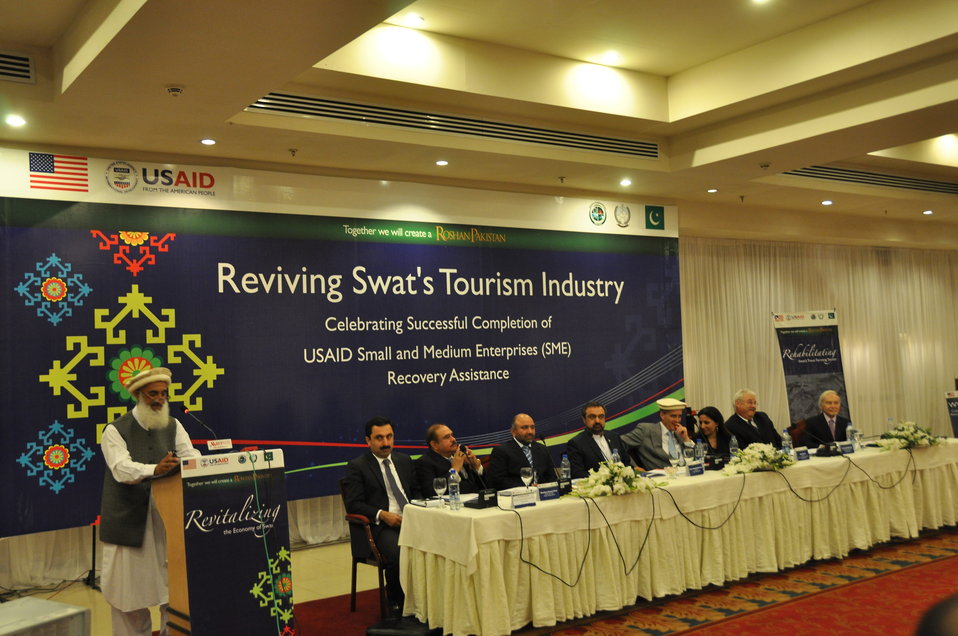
Graduation event of USAID Firms Project's Malakand Small and Medium Enterprises (SME) Recovery Assistance Program

Business owner, Mr. Meraj uddin, President, Hotel Association, Swat gave an inspirational account of their experience of partnering with the USAID Firms Project